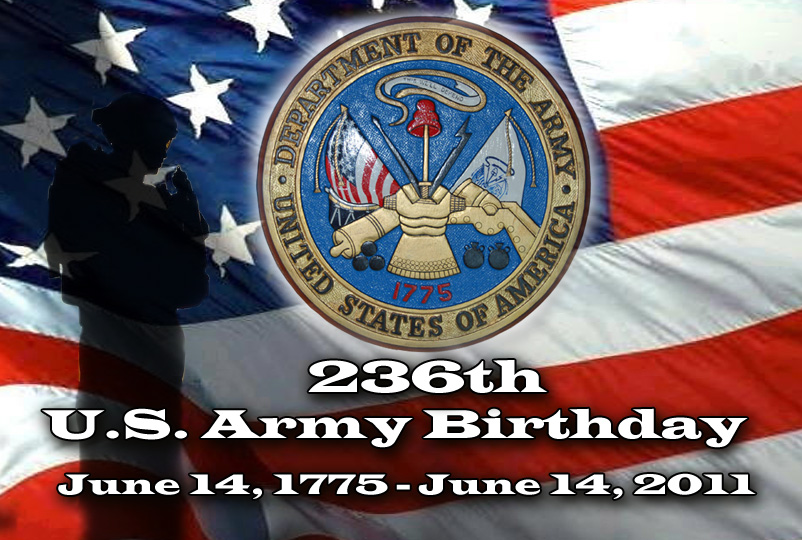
Army birthday